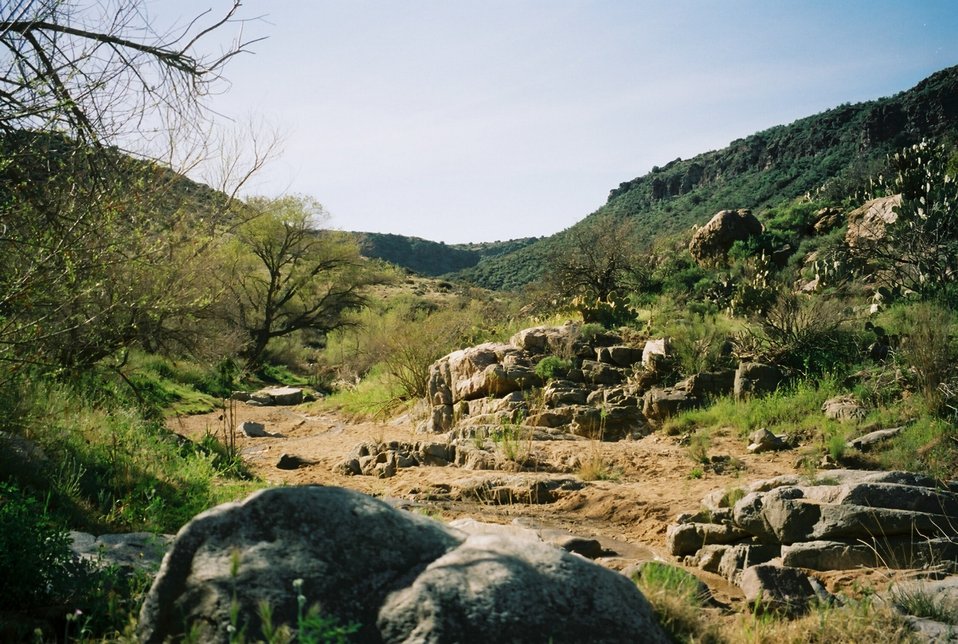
Agua Fria National Monument area.